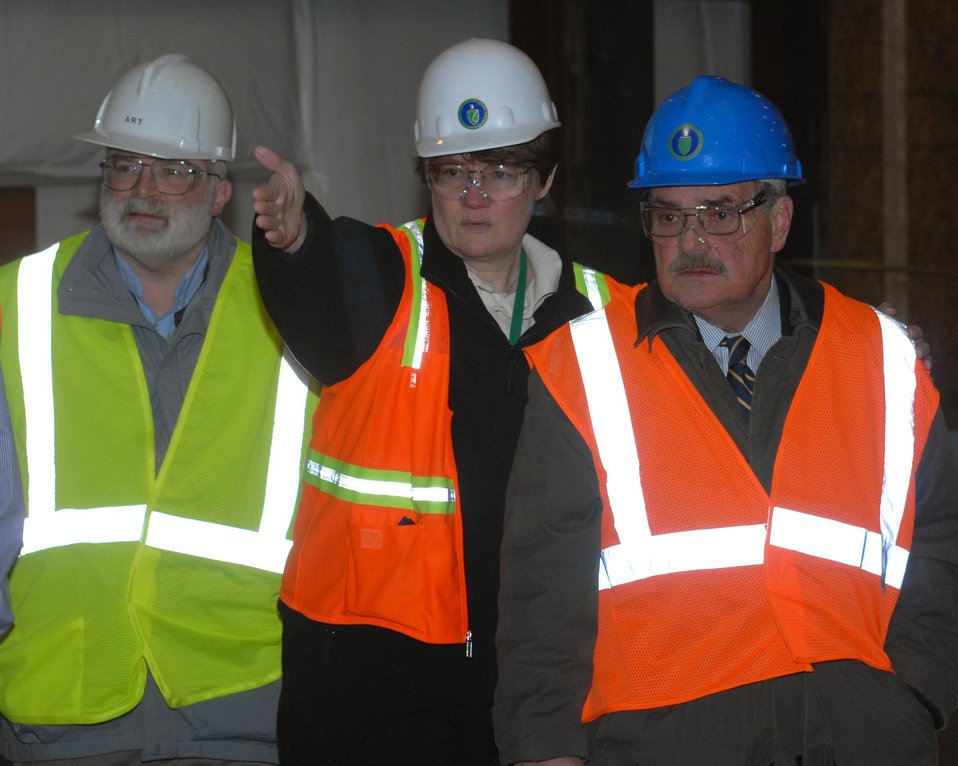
From left, Arthur Kleinrath, U.S. Department of Energy (DOE) Miamisburg site manager, Jane Powell, DOE-Fernald Preserve site manager, and Michael Owen, director of the DOE Office of Legacy Management, inspect the Fernald Preserve Visitor Center during construction.